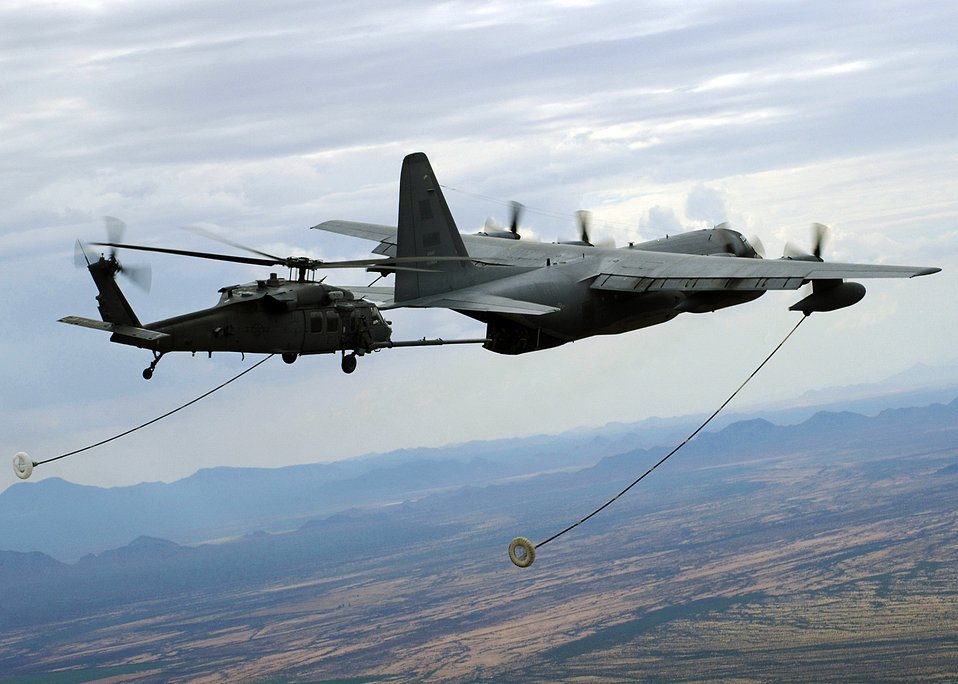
Readying a rescue

An HH-60G Pave Hawk maneuvers into position to refuel from an HC-130P/N King Aug. 5, 2011, over the Arizona desert. The Pave Hawk is assigned to the 55th Rescue Squadron, and the King is assigned to the 79th Rescue Squadron.